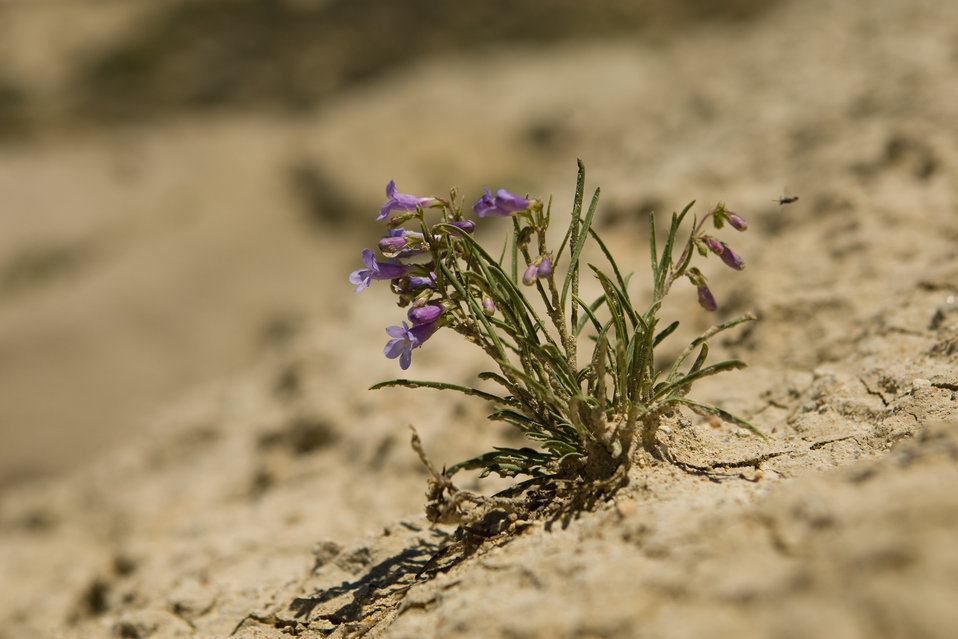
Colorado Rare Plant Conservation Initiative

The Colorado Rare Plant Conservation Initiative (RPCI) is a partnership of 23 statewide and regional agencies, private organizations, and academic institutions working to conserve 121 rare plants in Colorado. As part of these efforts the group developed the Colorado Rare Plant Conservation Strategy, developed Best Management Practices to reduce energy development impacts, addressed climate change, and developed focused strategies for the conservation of individual species at eight priority landscapes. The group has also worked to coordinate volunteer efforts for plant conservation across the state.